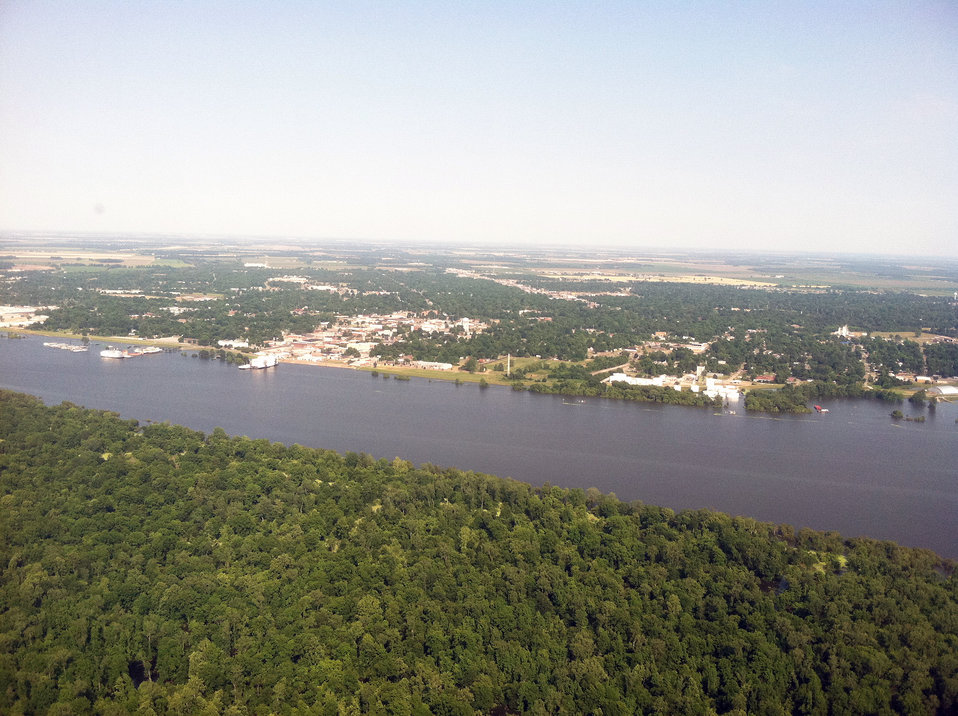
Aerial view on the flooding on the Mississipi River, on Thursday, May 19, 2011 from the MS side.